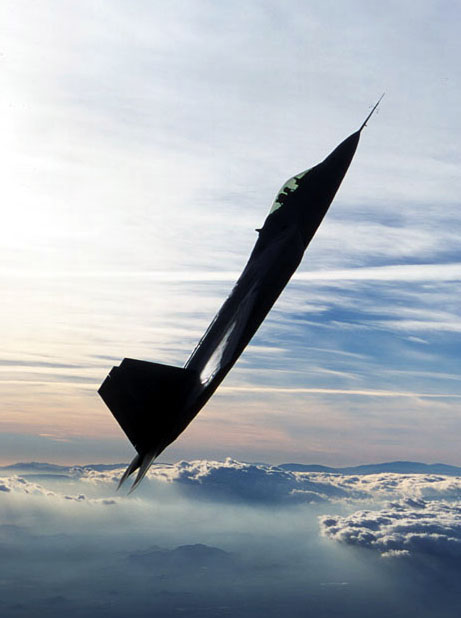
Raptor rising

FILE PHOTO -- An F/A-22 Raptor climbs on a test mission here. The F/A-22 combines stealth, supercruise, maneuverability and many other features enabling a first look, first shot, first kill capability that will provide continued air dominance for generations to come.